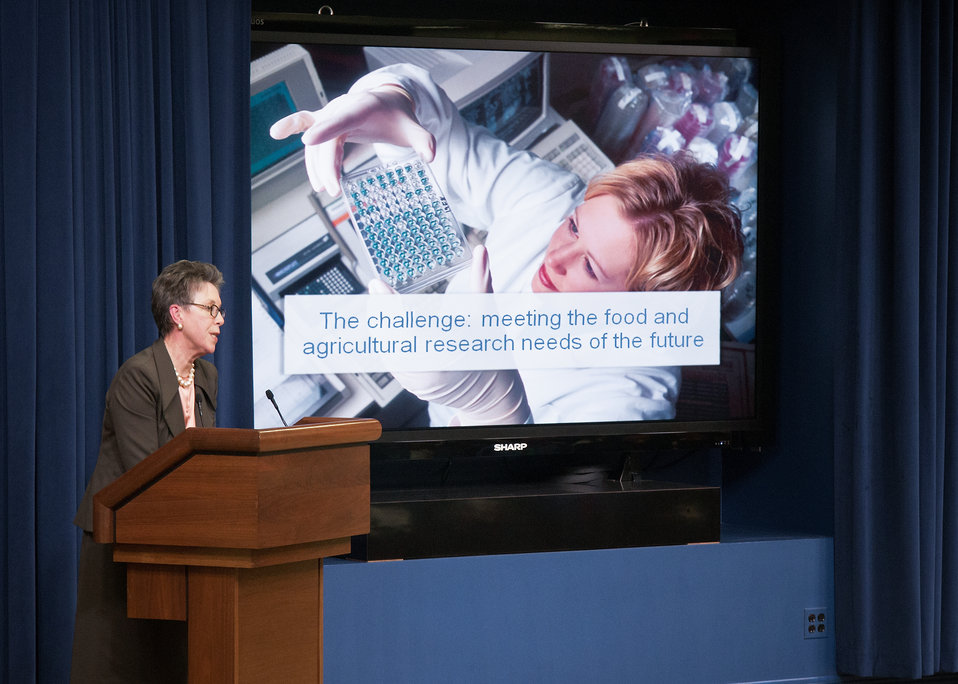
Dr. Catherine Woteki, Chief Scientist, Undersecretary, Research Education and Economics discussed the challenge of meeting the food and agriculture needs of the future at the 11th Annual Meeting of State Agriculture and Rural Leaders at the Eisenhower Executive Office Building in Washington, D.C., on Friday, January 6, 2012.